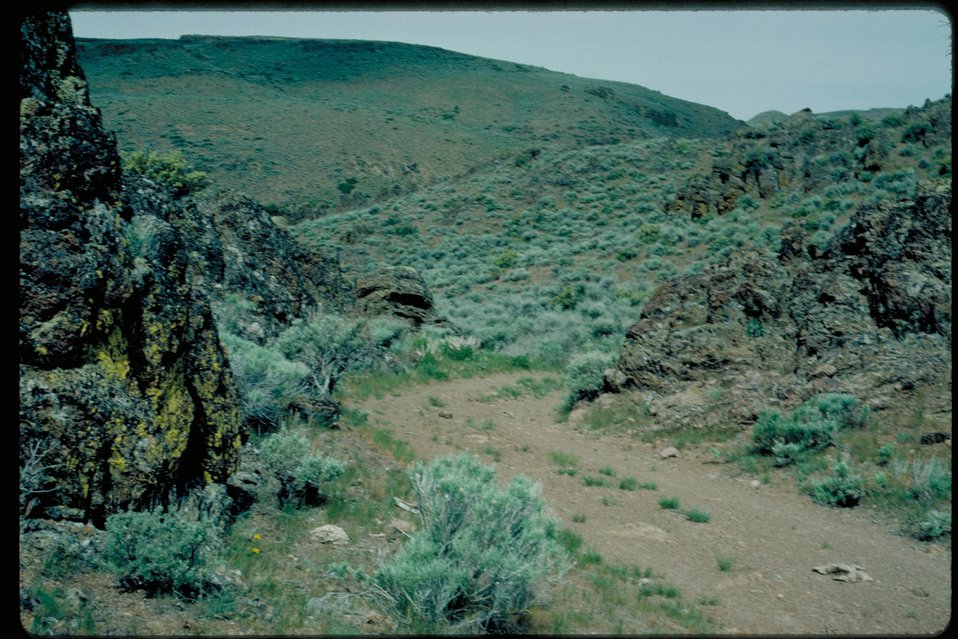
Goodales Cutoff Oregon Trail Lower Snake River District